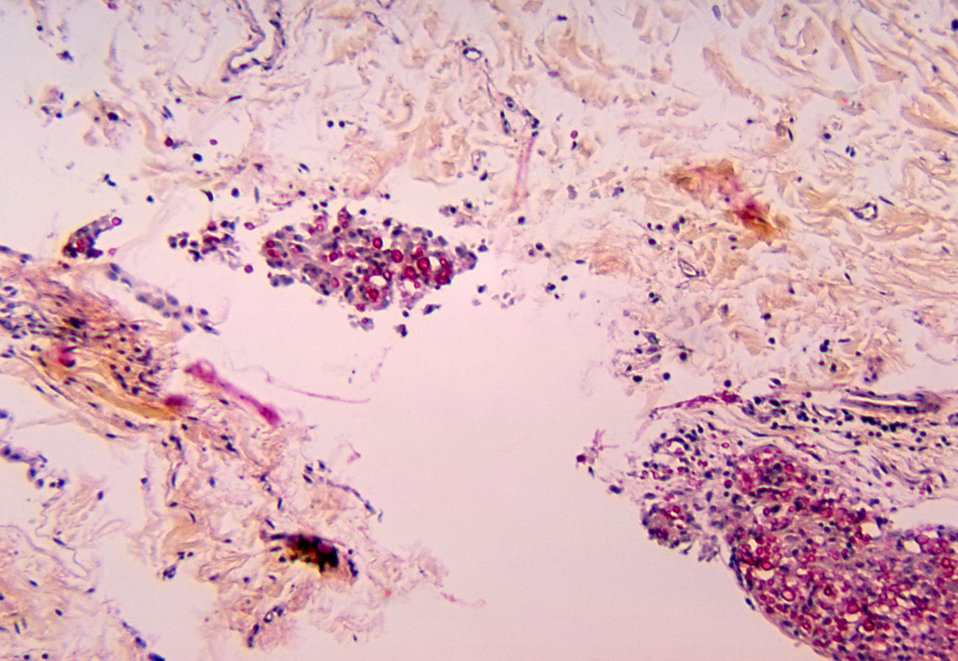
This micrograph depicts the histopathologic changes associated with cryptococcosis of the lung using Mucicarmine stain.